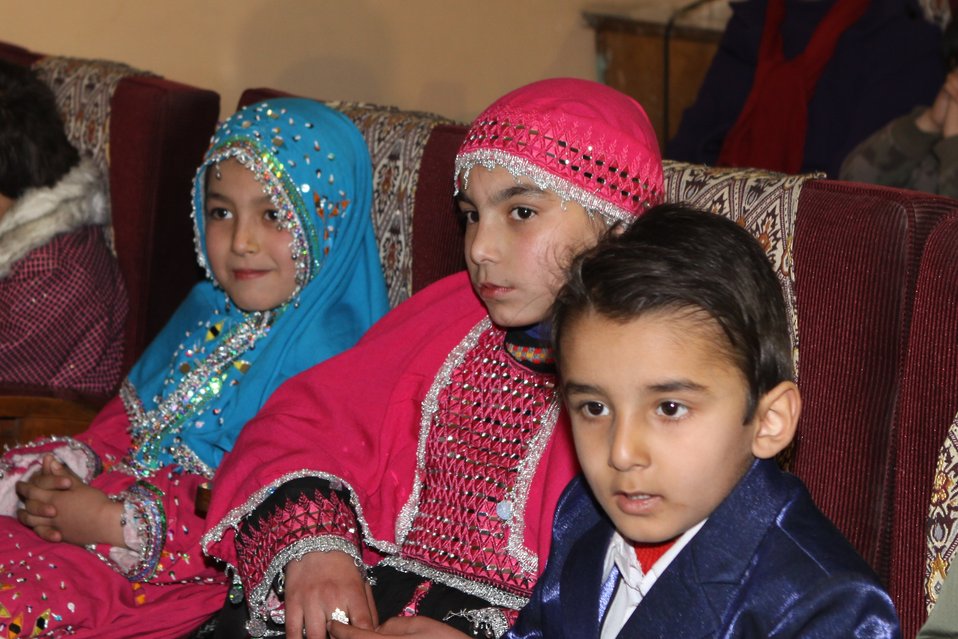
Community Health Workers Celebrated

Kabul, Afghanistan | December 5, 2010 — In support of the United Nations designated International Volunteer Day for Economic and Social Development, Afghanistan’s Ministry of Public Health celebrated its annual Community Health Worker Day today. Acting Minister of Public Health Dr. Suraya Dalil, USAID Senior Deputy Mission Director Robert Hellyer, other government officials, and international donors joined in recognizing the critical contribution of community health workers in Afghanistan and encouraging them to continue their voluntary support to their communities.
The event praised the contributions of the more than 22,000 volunteers throughout the country who deliver community level health-education, counseling, and services out of village health posts located in private homes. The Ministry of Public Health envisioned that community-based healthcare programs will actively encourage communities and families to adopt healthy lifestyles and behaviors, and provide families access to high quality and socially acceptable preventative medicine and life-saving services.
“We have 22,000 community health workers in Afghanistan that are able to implement the basic and standard medicines. They all have been trained through a job description,” said Minister Dalil. Addressing the health workers, she added, “I am proud and feel powerful that I have people like you.”
USAID-funded health projects collaborate closely with the Ministry of Public Health to improve the health and nutritional status of Afghans, provide quality primary healthcare, and promote healthy behaviors at the community and household-levels. USAID supported the training of more than 9,000 of the volunteer community health workers currently working in Afghanistan.
“On behalf of the American people, I congratulate the Community Health Workers for their diligence to gain the skills and knowledge necessary to serve their communities in this important role,” said USAID Senior Deputy Mission Director Hellyer. “USAID strongly supports community based health care and believes that quality community-based health services are essential to reaching Afghanistan’s Millennium Development Goals.”
To support the Basic Package of Health Services, USAID assisted in developing the community health worker training manual, helped train community health worker supervisors and master-trainers, facilitated in-service training, and produced and developed reporting tools, job aids, and education materials.